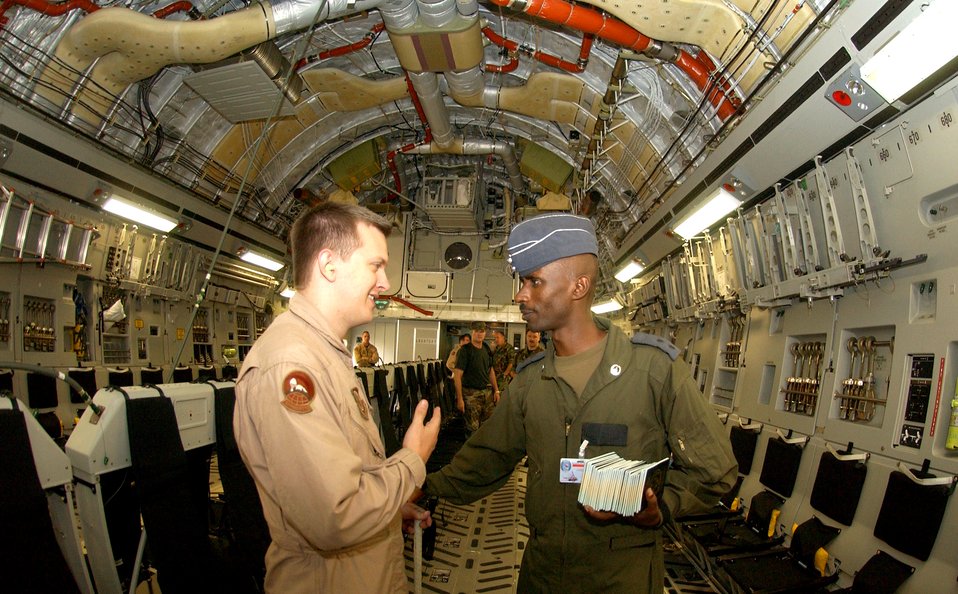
USAFE helps Rwandan troops deploy to Darfur

KIGALI INTERNATIONAL AIRPORT, Rwanda -- Tech. Sgt. Phillip Derenski talks with Rwandan Lt. Kadhafi Ntayomba on a C-17 Globemaster III from McGuire Air Force Base, N.J., after arriving here July 17. The United States is providing transportation for 1,200 Rwandan forces to Sudan in support of NATO assisting the African Union's expanded peacekeeping mission in Darfur with logistics and training.